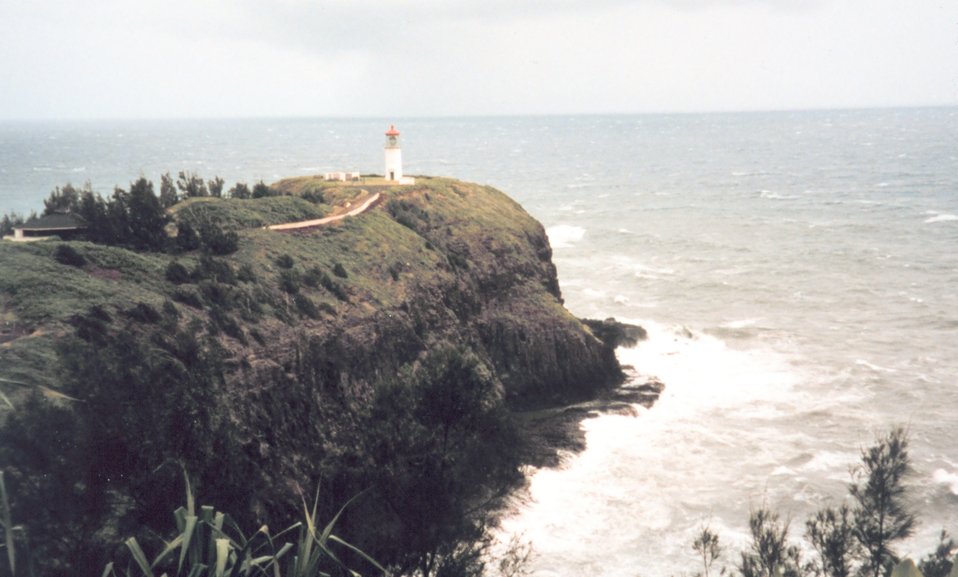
Kilauea Point Lighthouse